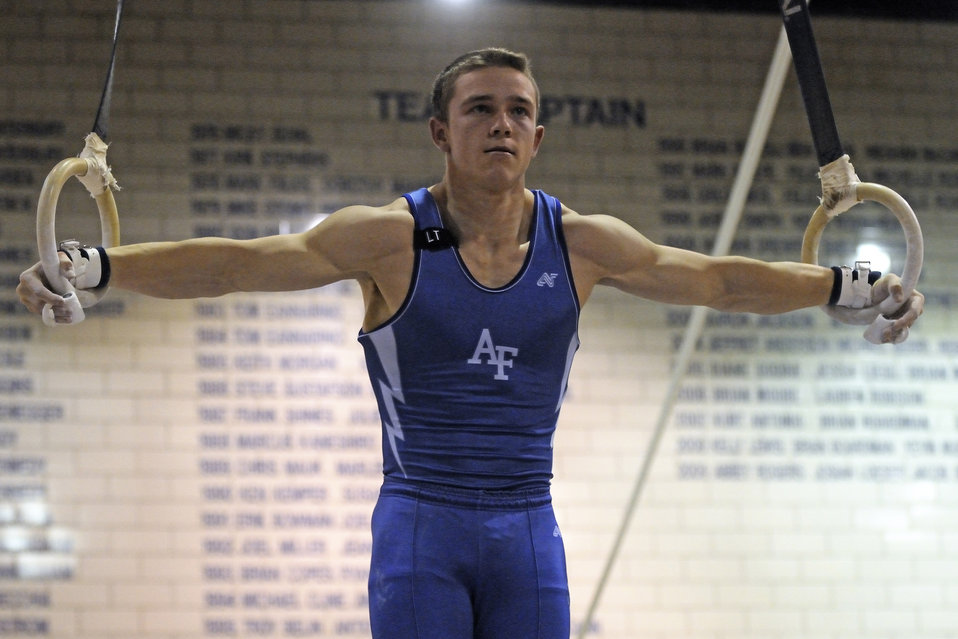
Airpower

U.S. Air Force Academy senior Jake Schonig executes an iron cross on the still rings during the annual Rocky Mountain Open Jan. 10 at the Academy in Colorado. The Falcons men's gymnastics team accounted for seven top-10 finishes as they placed third overall in the meet in front of a capacity crowd.